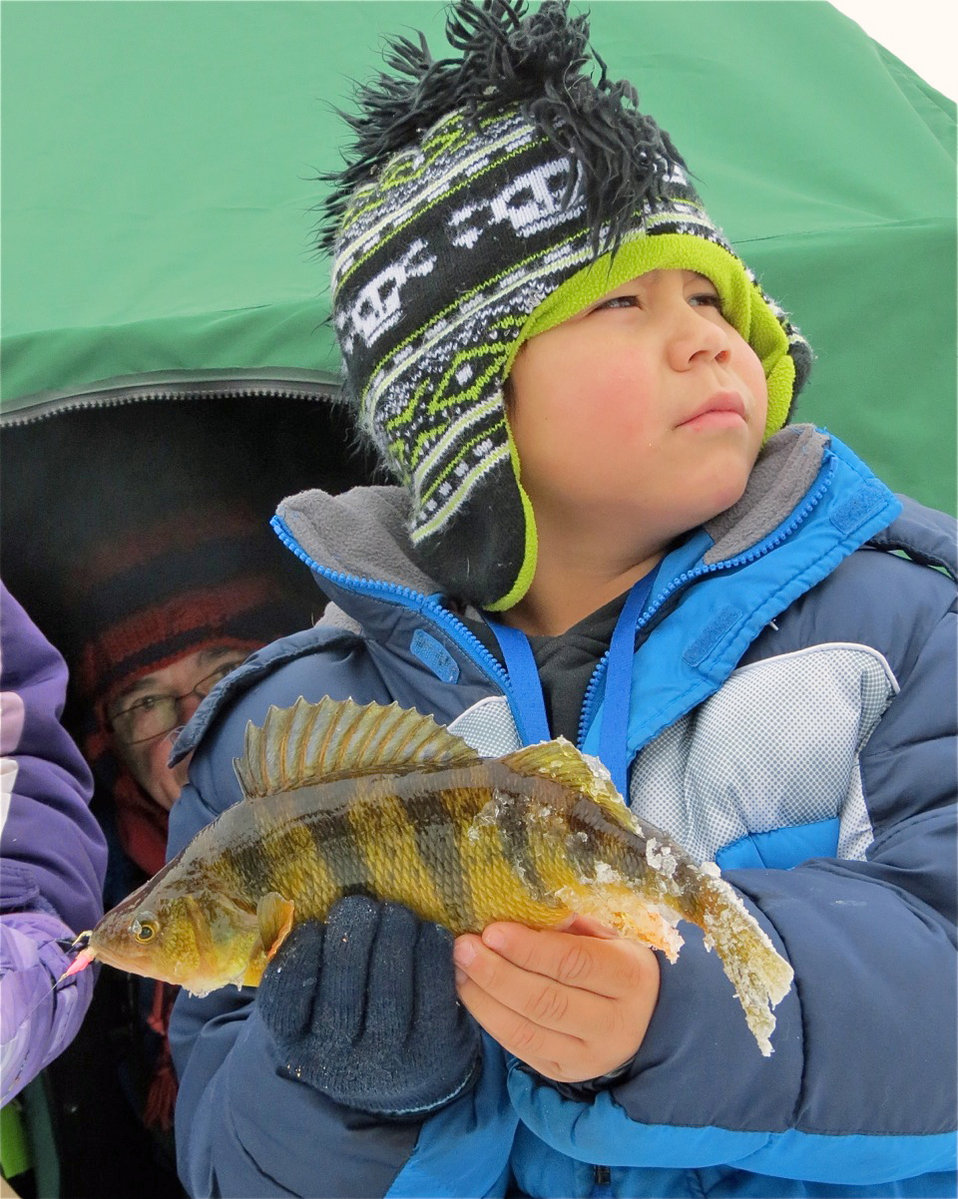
Catch of the Day